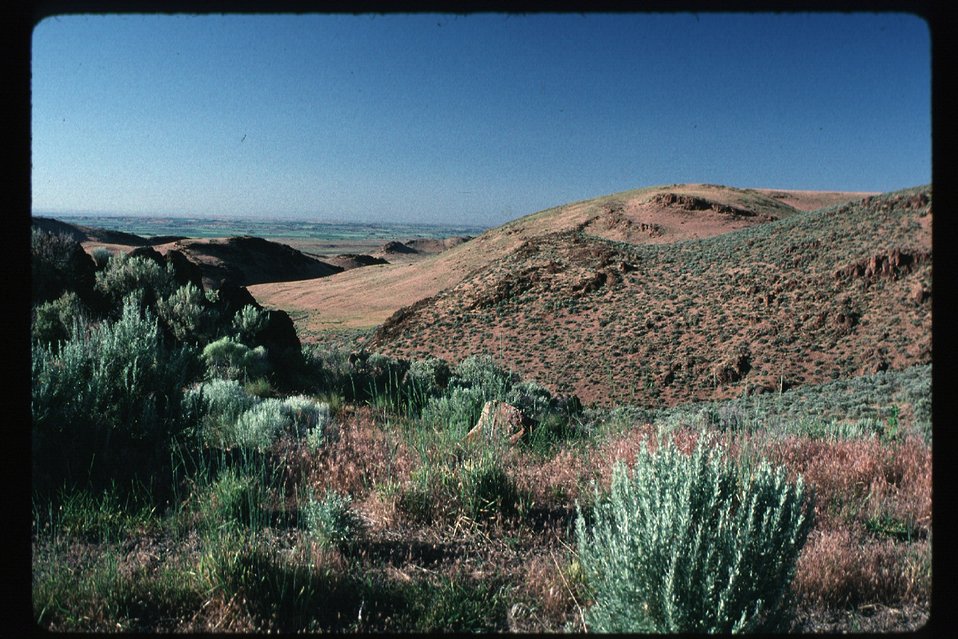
Owyhee Foothills looking toward Canyon County Rangeland Four Rivers Field Office LSRD Lower Snake River District